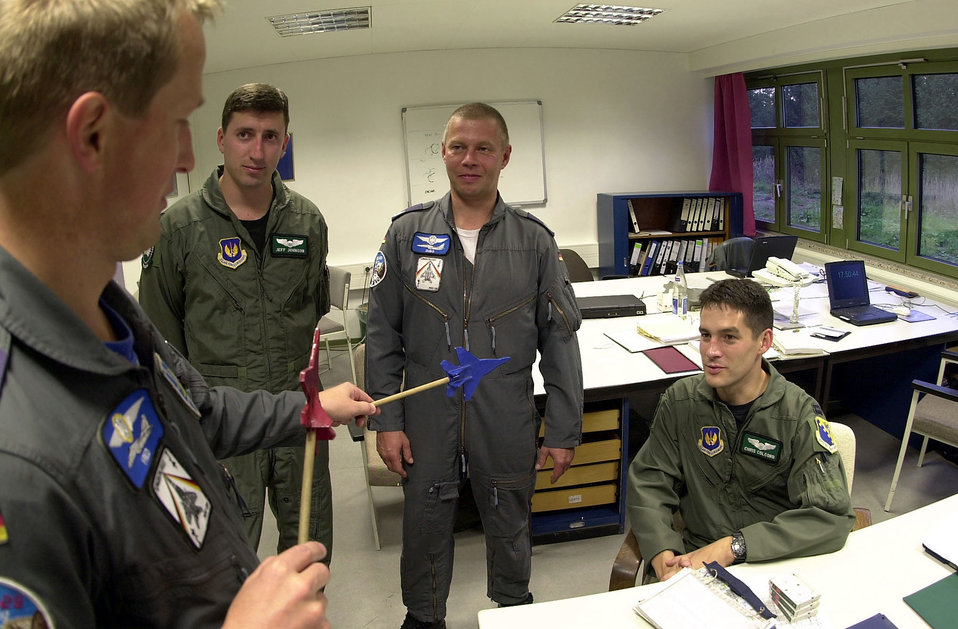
Mig Training

LAAGE, Germany -- German Capt. Fred Schmidt, a MiG-29 Fulcrum pilot from the 73rd Fighter Squadron in Laage, Germany, de-briefs U.S. Air Force Maj. Andreas Zube (center) with Capts. Jeff Johnson and Chris Colcord, U.S. F-16 pilots. The U.S. Air Force pilots are deployed to Laage with the 555th Fighter Squadron at Aviano Air Base, Italy. The two teams engaged in air-to-air battle with two of the world's top fighters. The deployment was designed to teach F-16 pilots to fly against Mig-29s.